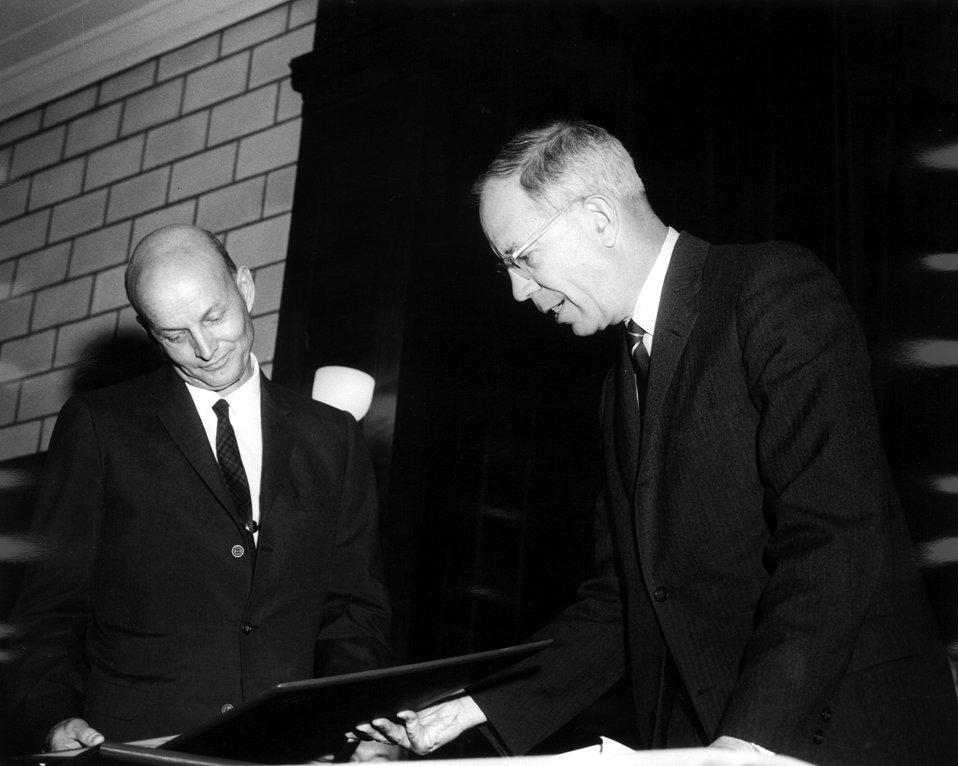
Lawrence Award, 1966.